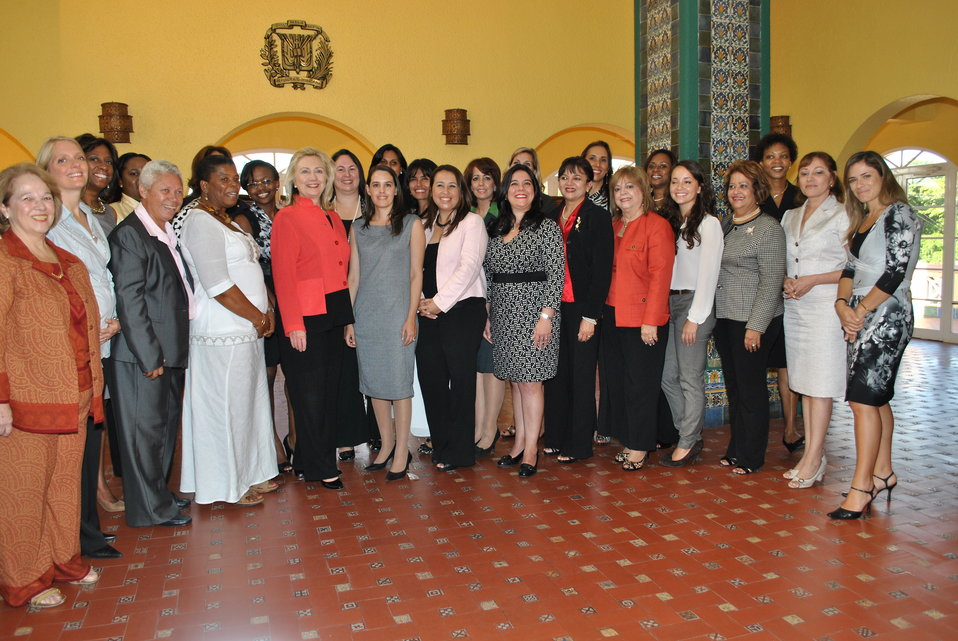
Secretary Clinton Poses for a Photo With Women's Entrepreneurship Network Participants

U.S. Secretary of State Hillary Rodham Clinton poses for a photo with participants of the Women's Entrepreneurship Network during the Pathways to Prosperity Conference in Santo Domingo, Dominican Republic, on October 5, 2011.